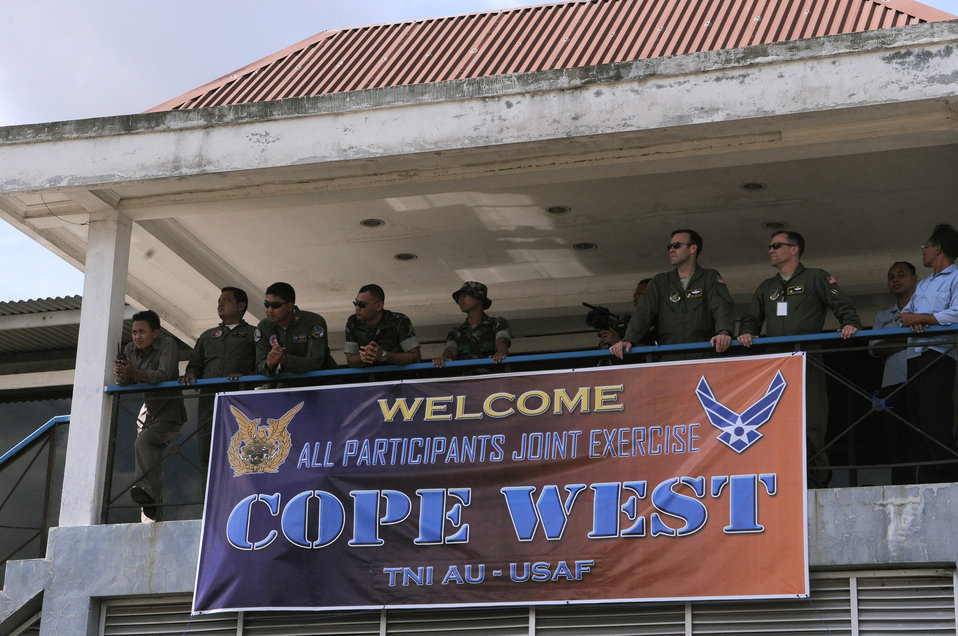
Exercise shows U.S. partnership with Indonesia

Two officers discuss various scenarios that U.S. and Indonesian airmen will participate in during Exercise Cope West 2010 April 17, 2010, at Halim Air Base, Indonesia.